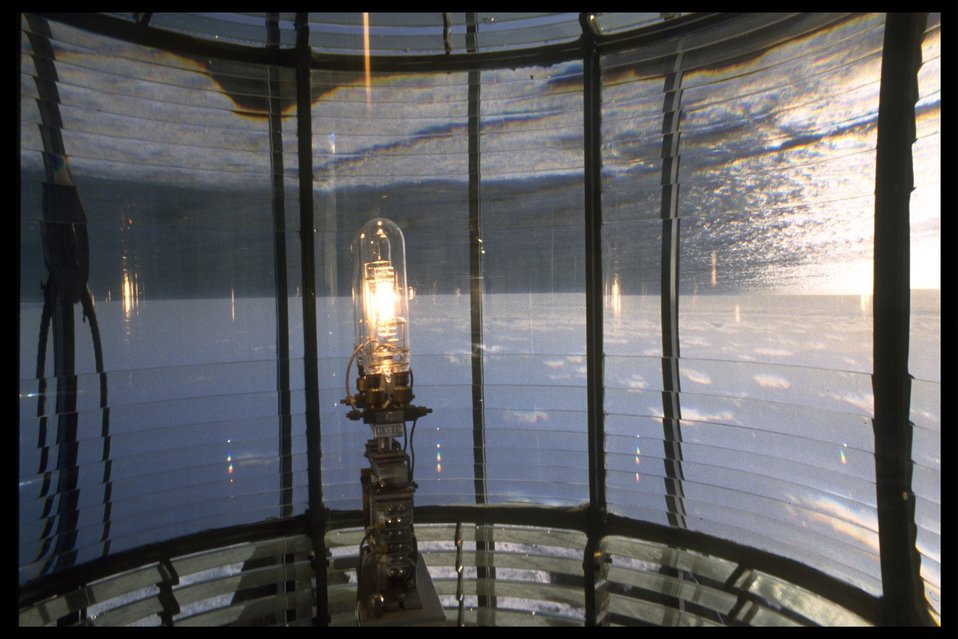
The lightbulb (1000 watt lens) on the interior of the Yaquina Head lighthouse.